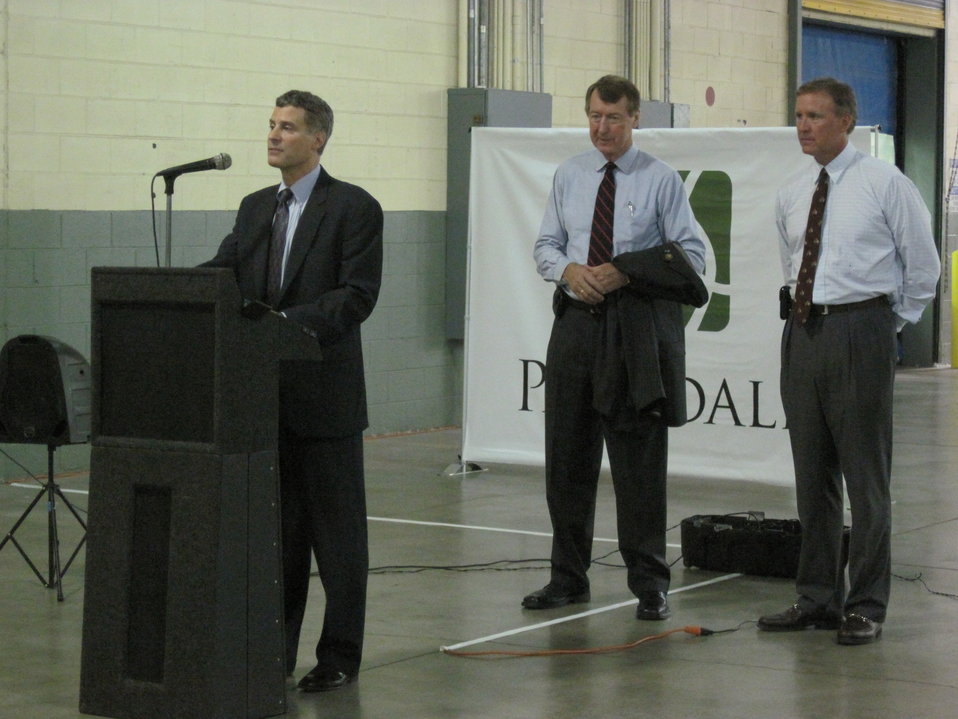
Krueger in NC, 7/12/10

Assistant Secretary Alan Krueger was in Sanford, NC on July 12, 2010 to announce a new report showing that, from February 2010 to May 2010, businesses have hired an estimated 4.5 million new workers who had been unemployed for eight weeks or longer, making those businesses eligible to receive up to a projected $8.5 billion in HIRE Act tax exemptions and credits for hiring the unemployed.

'Helping unemployed Americans get back to work – particularly the long-term unemployed – is essential to ensuring a strong economic recovery,' said Assistant Secretary Krueger.